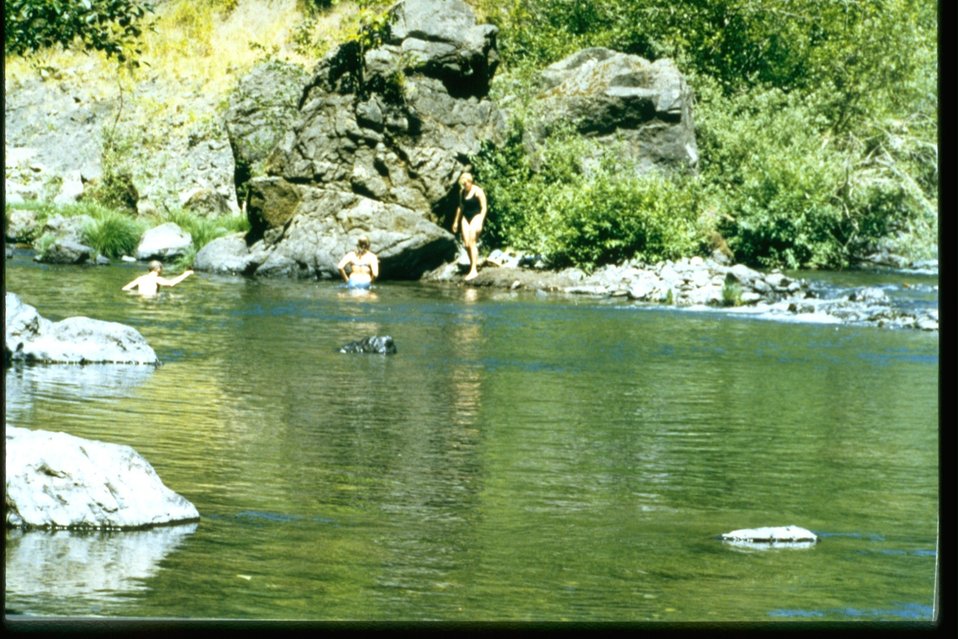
Kids swimming at Sixes River.